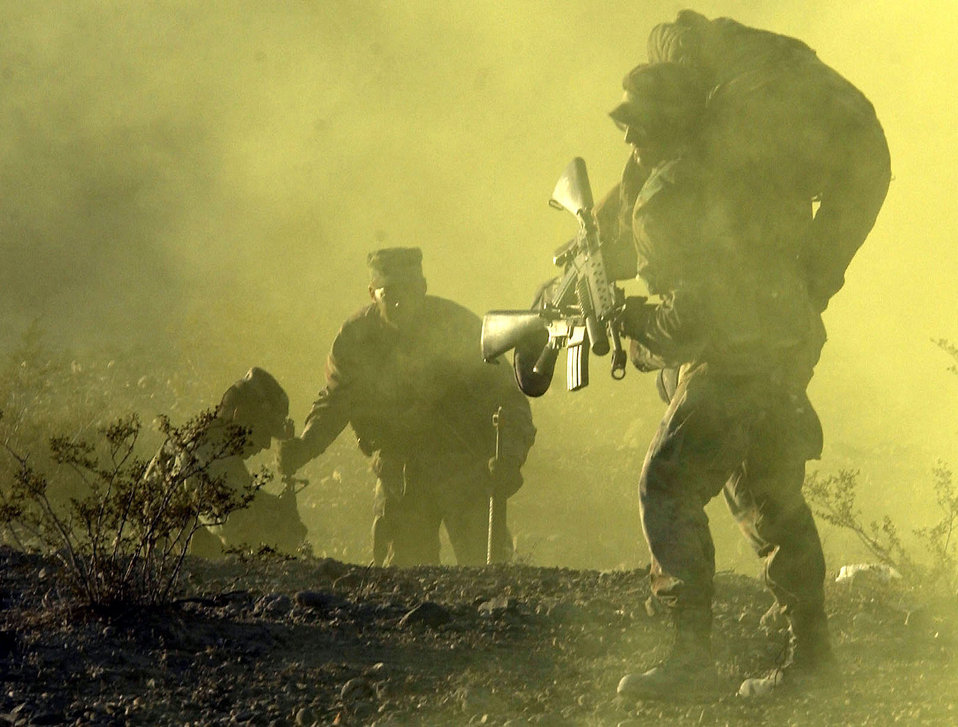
The fog of war

INDIAN SPRINGS, Nev. -- First Lt. Iwan Spolsky, 319th Security Forces Squadron, Grand Forks Air Force Base, N.D., moves a wounded squad member as enemy forces launch an attack on his position during an Air Force Pre-Ranger training exercise held here.